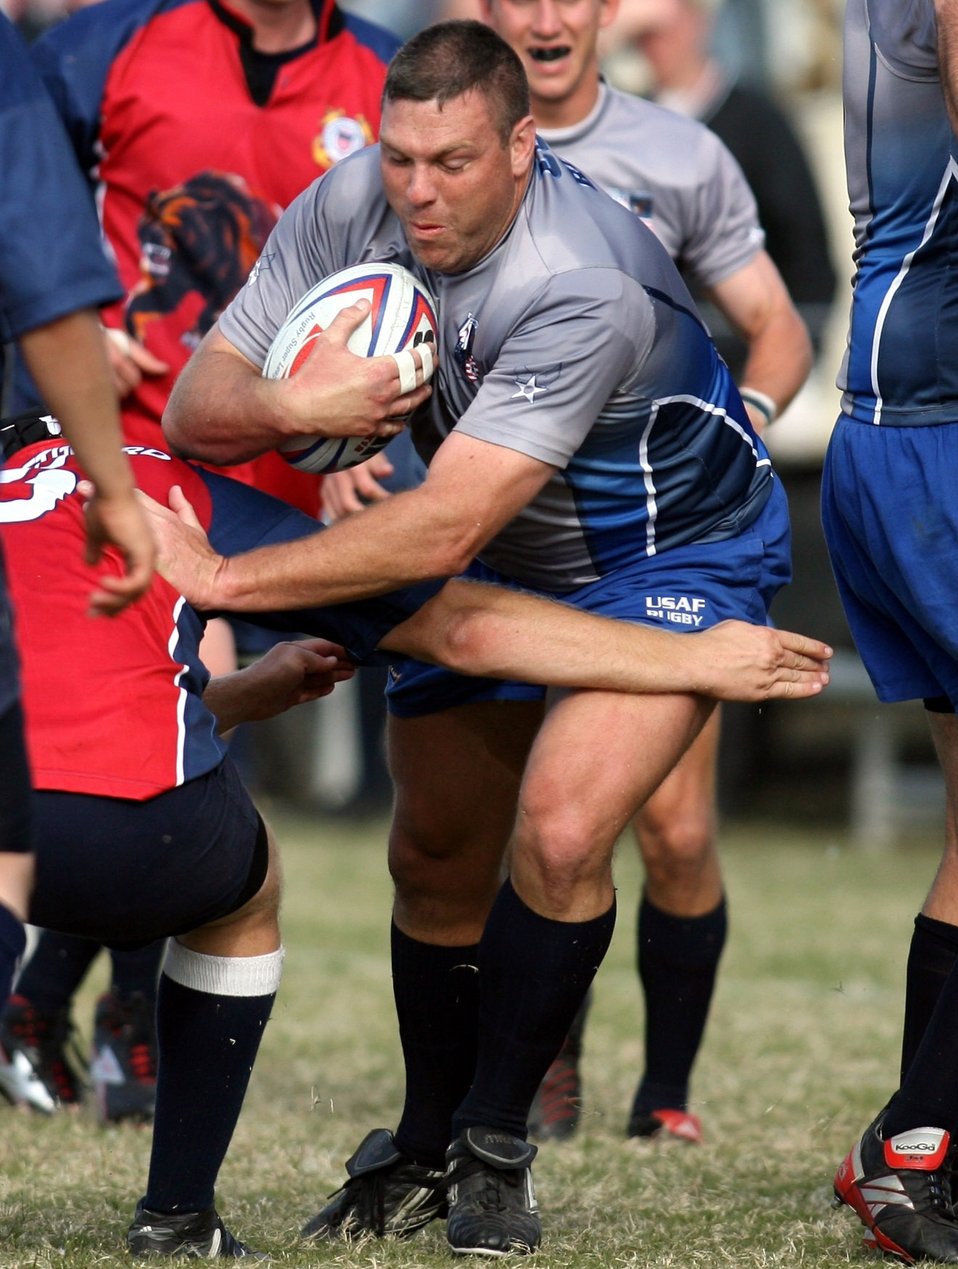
AF rugby team wins third straight Armed Forces title

Air Force Maj. Kevin Groff runs through Coast Guard defenders during their match Oct. 24 at the Armed Forces Rugby Championship at Camp Lejeune, N.C. The Air Force team, which went on to win its third consecutive tournament title, defeated the Coast Guard team 37-3.